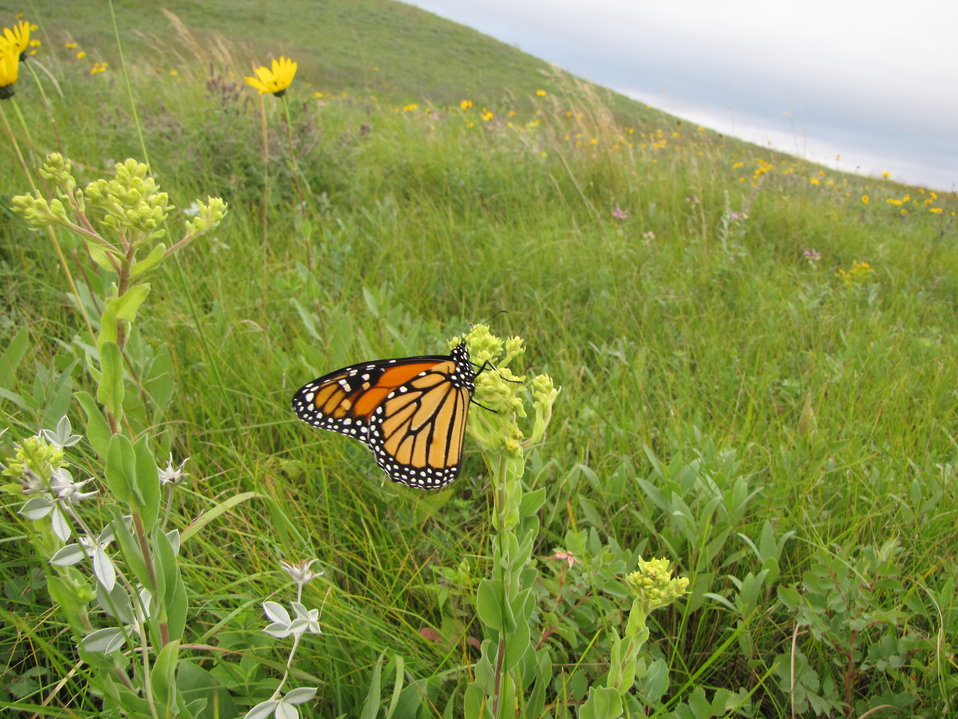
Butterfly at Sullys Hill National Game Preserve Fort Totten, North Dakota

A butterfly at Sullys Hill National Game Preserve in Fort Totten, ND.